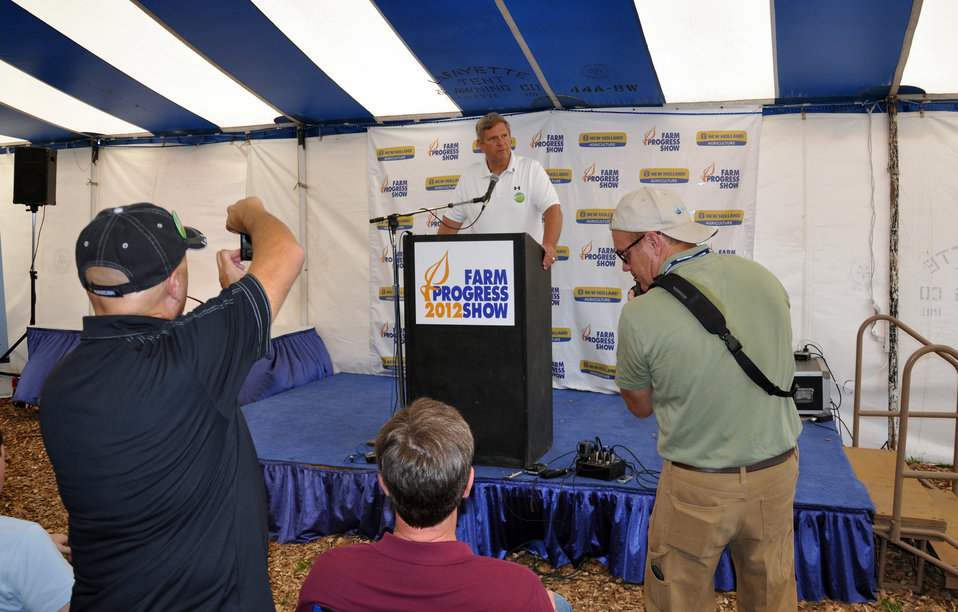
Agriculture Secretary Tom Vilsack visits with the media during the 2012 Farm Progress Show in Boone, Iowa, on Aug. 30, 202. Vilsack announced new USDA grants for Beginning, Socially Disadvantage Farmers, and Historically Underserved Farmers.